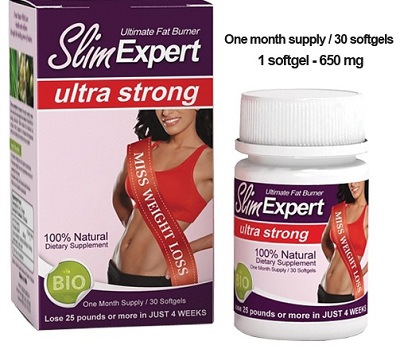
RECALLED - Marketed as a dietary supplements for weight loss

October 7, 2013 – Product Recall – B@B Trade Inc. Issues a Voluntary Recall of 'Slim Fortune', 'Lidiy', and 'Slim Expert' weight loss Dietary Supplement.